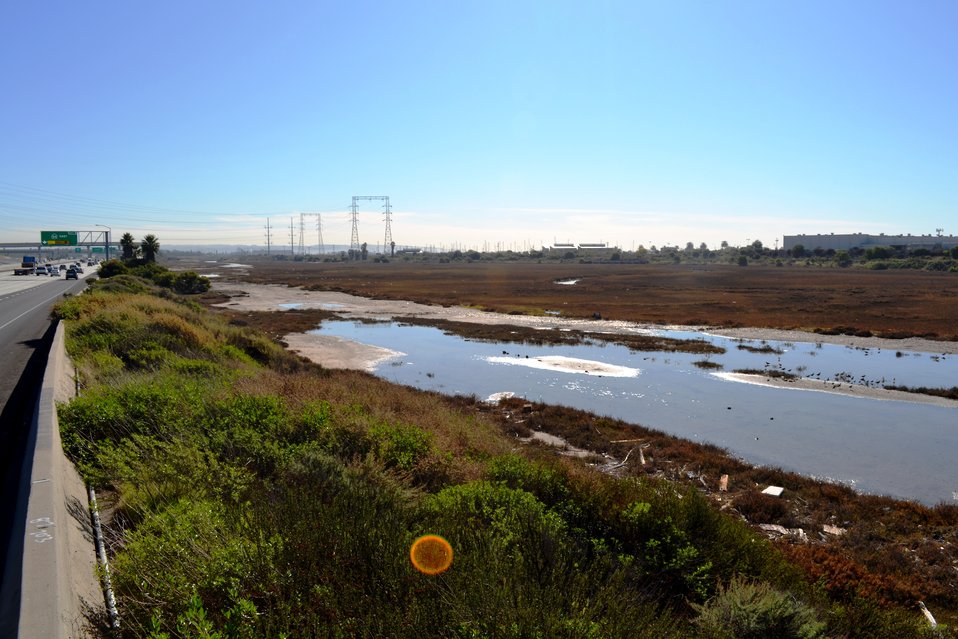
Paradise marsh surrounded by urban development

The bay marina of National City, the I-5, and the 54 FWY all surround this portion of Sweetwater Marsh, a unit of the San Diego Bay NWR. This is the common sight if you are riding south on I-5. Many times, you will see several bird species resting or feeding in the marsh. Rather than stop on the HWY to look, you can bird watch safely at the Best Western Hotel parking lot on Bay Marina Drive. There, interpretive signs will explain the importance of Sweetwater Marsh, and what it has meant for the Kumeyaay, the Native Americans of the area